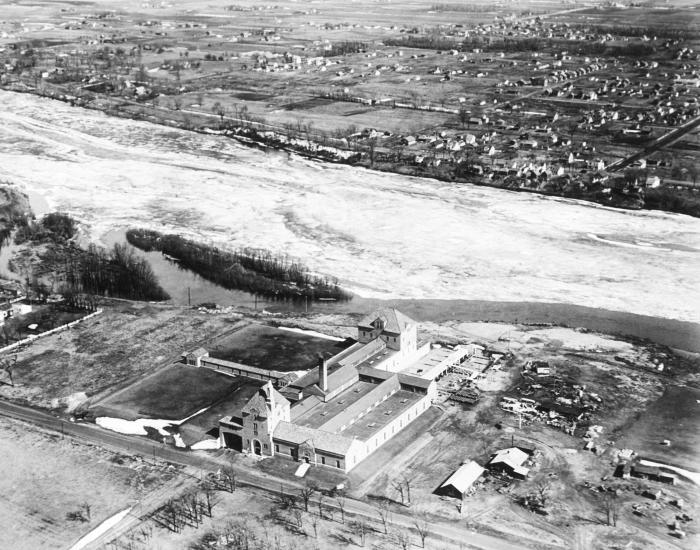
This historic 1931 photograph taken from an aerial perspective, depicted the Minneapolis and Columbia Heights water filtration plant. It was one of many water treatment facility photographs commissioned by Minnesota public health officials.